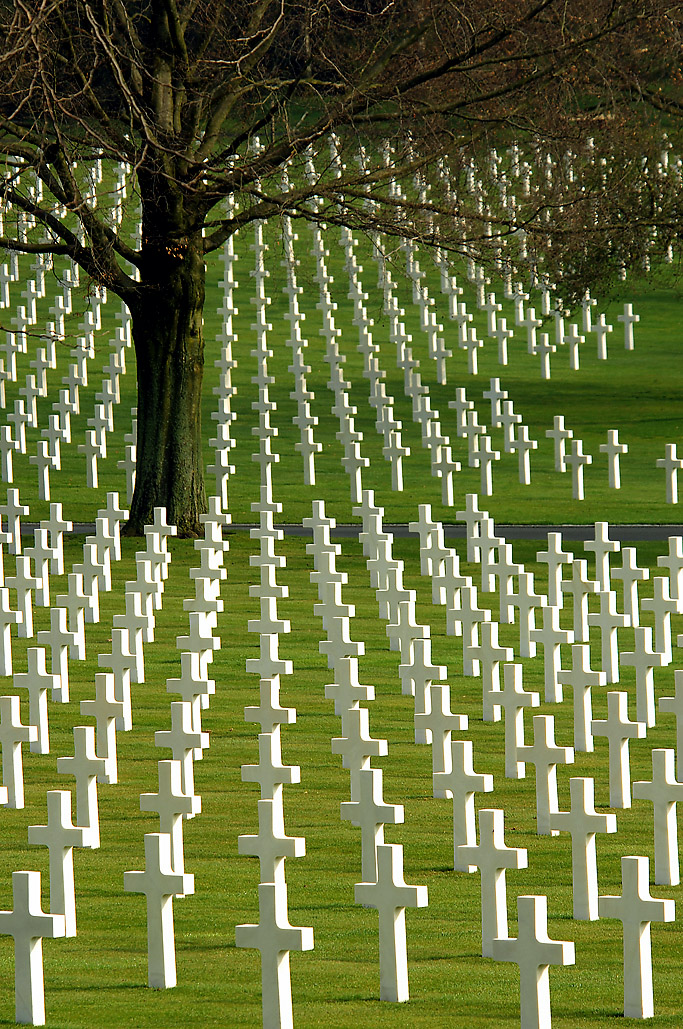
Airmen to visit World War II cemetery on Memorial Day

More than 10,000 Americans are buried at the Lorraine American Cemetery in St. Avold, France, where a memorial service takes place at 11 a.m. May 25.